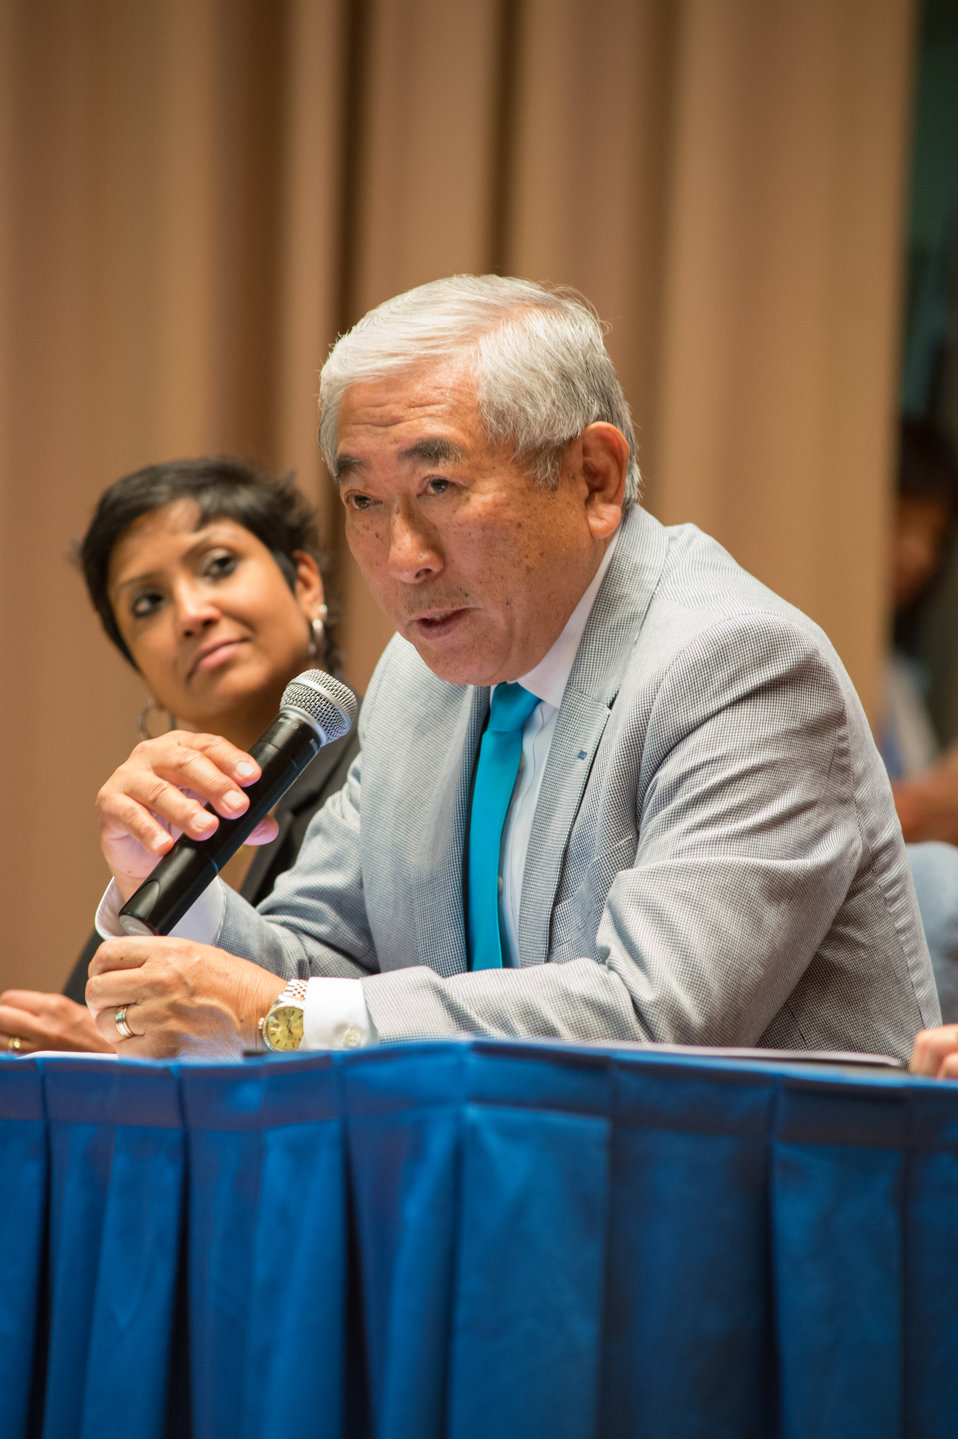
Floyd Mori, President and CEO, Asian Pacific American Institute for Congressional Studies (APAICS) participates in a panel discussion on civil rights and leadership U.S. Department of Agriculture (USDA) in Washington, D.C. on Thursday, May 22, 2014. The theme of the event was, “Diverse Leadership and Expanding Opportunity: Am Imperative for America.”